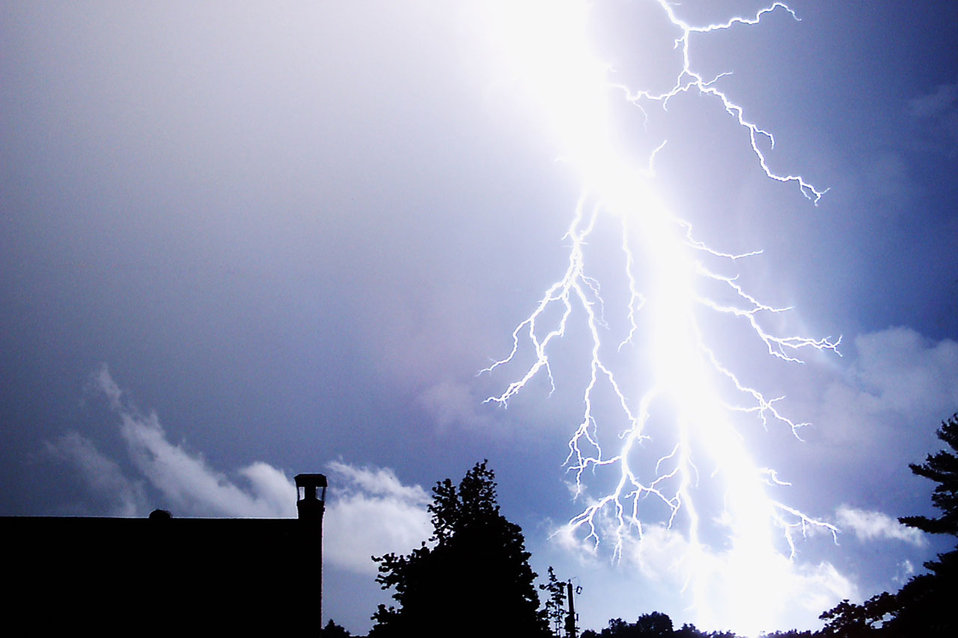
Lightning strike

Taken on may 4th 2004, independence, mo, during a severe thunderstorm.